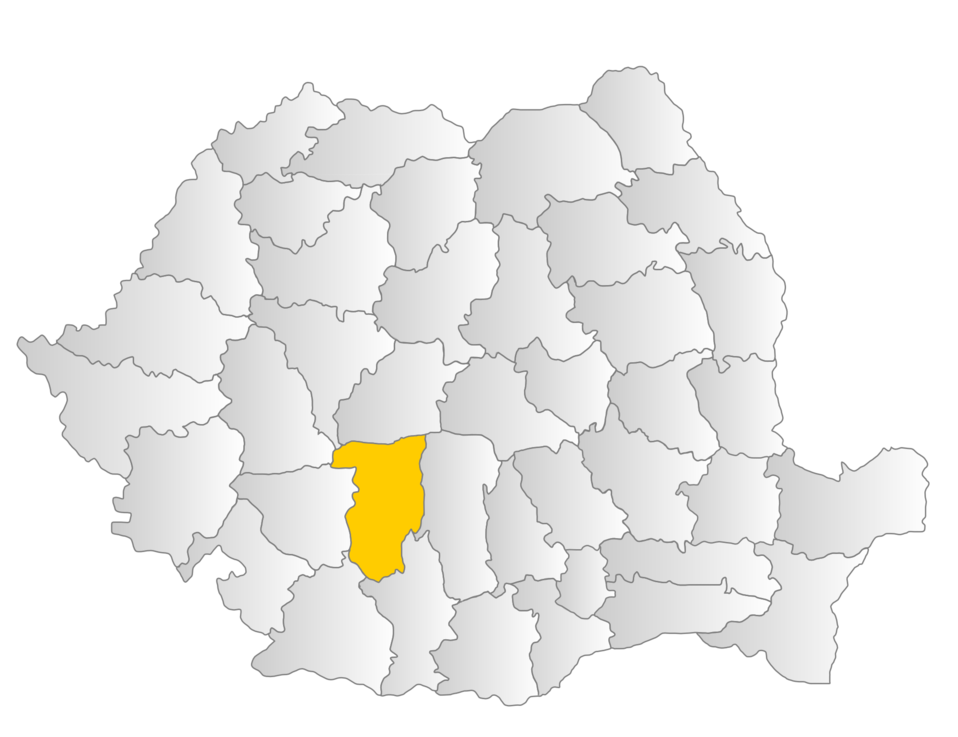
own work